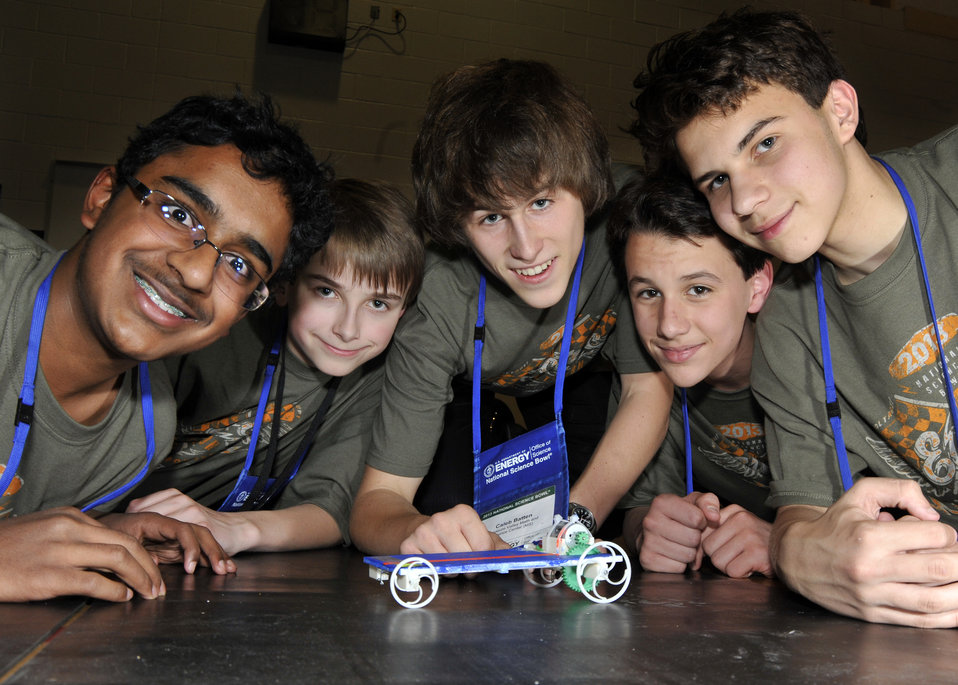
Students from Treasure Valley Math and Science Center in Boise, ID won second place in the Electric Car Competition at the 2013 National Science Bowl in Washington, DC.

The Department of Energy created the National Science Bowl in 1991 to encourage students to excel in mathematics and science and to pursue careers in these fields.